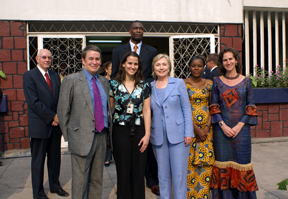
Secretary Clinton Conducts Town Hall Meeting With Congolese Students

U.S. Secretary of State Hillary Rodham Clinton poses for a photo after a town hall meeting with Search for Common Ground and Congolese University Students August 10, 2009 in Kinshasa, Democratic Republic of the Congo.